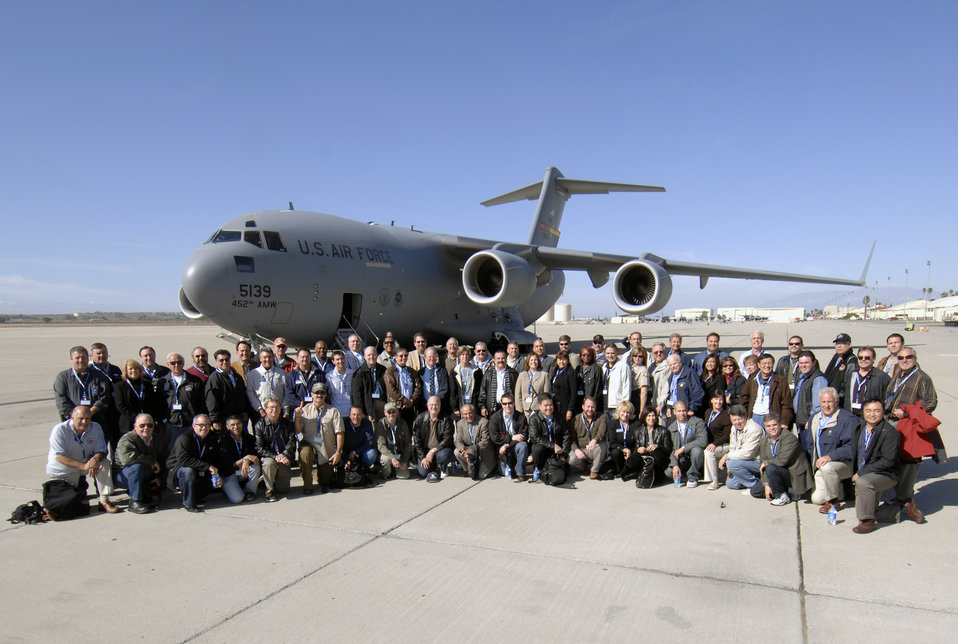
C-17 civic leader orientation flight

Civic leaders from Southern California had the opportunity to take an orientation ride on a C-17 Globemaster III during a refueling mission Nov. 10 from March Air Reserve Base, Calif. Held as part of Air Force Week-Los Angeles, the flight provided a chance for community members to learn more about the Air Force?s people and mission.